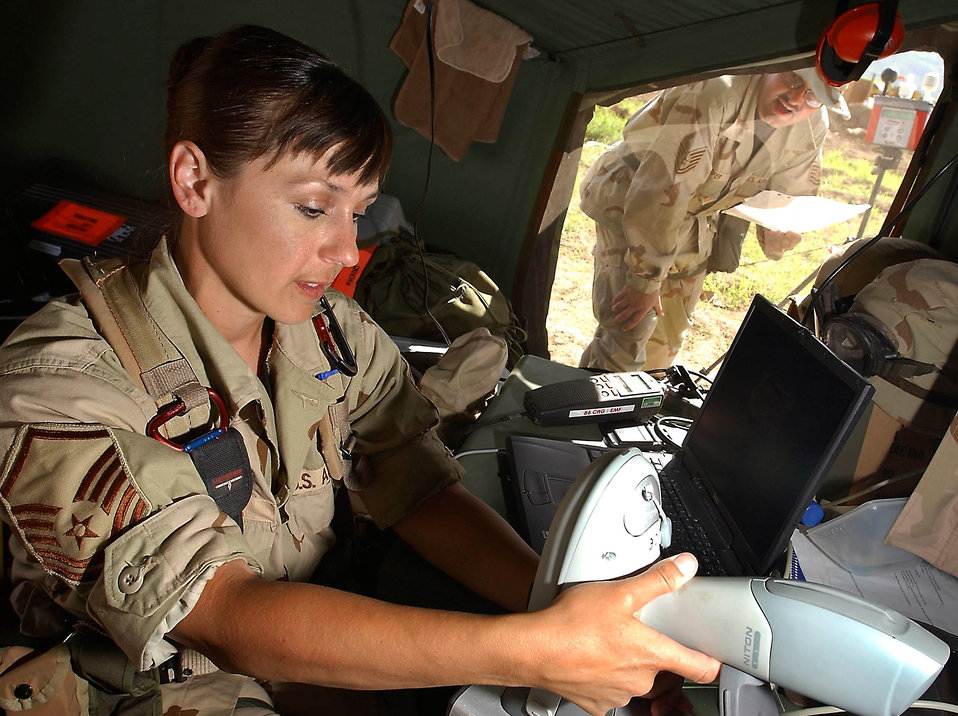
The heat is on

OPERATION IRAQI FREEDOM -- Tech Sgt. Heinz Kiefer, a public health troop, reads a wet bulb thermometer test results to Master Sgt. Mindy Patrick, a bioenvironmental engineering troop, at Bashur Airfield in northern Iraq. The test helps determine heat stress levels. Both airmen are assigned to the 86th Expeditionary Contingency Response Group's environmental medicine flight.